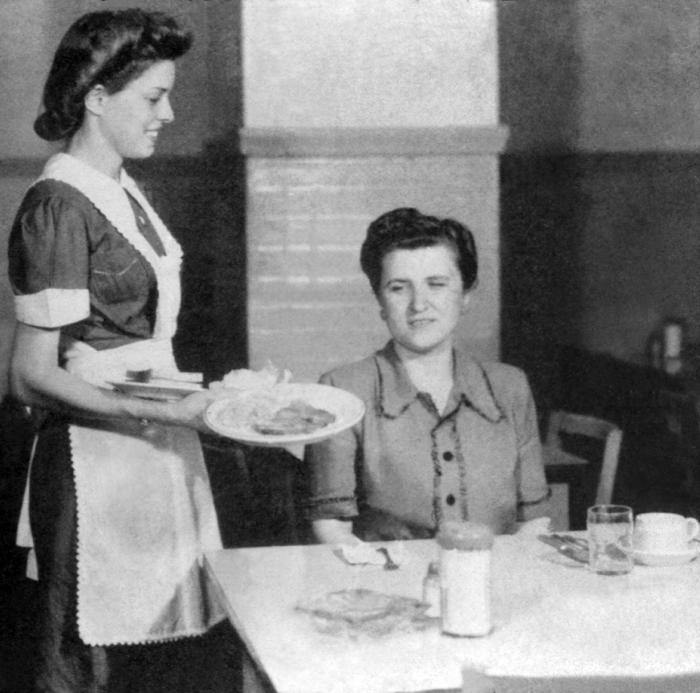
In this historic 1950s image a restaurant food server who was serving food in such a way as to increase the risk of spreading a communicable infection. The server was carrying too many plates to the table, thereby, running the risk of contaminating food items in the process. Note the plate balanced precariously on her bare forearm. She was increasing the chances for disease transmission to the customer.